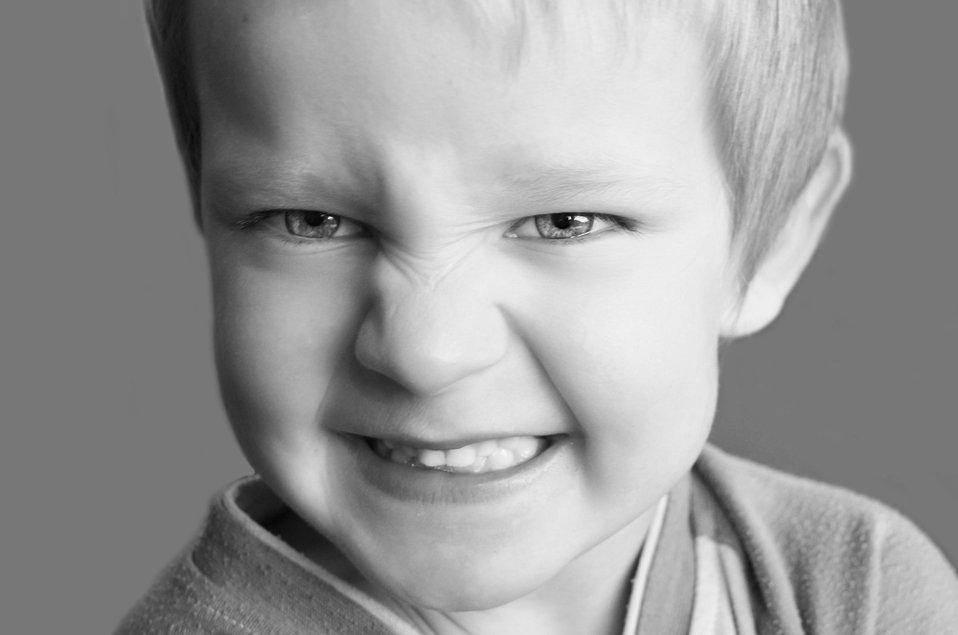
Snarling child.